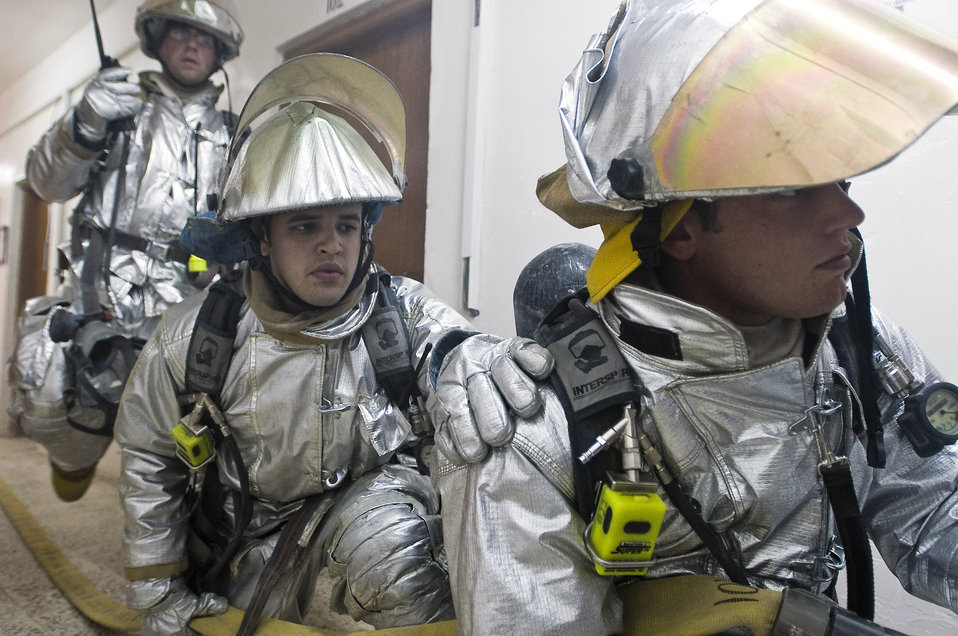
Practice makes perfect

Tech. Sgt. Garrick Hasty, Airman 1st Class Gregory Ramirez and Senior Airman Nathan Sole prepare to enter a smoke-filled room during a structural firefighting drill Oct. 3 at Ali Base, Iraq. Sergeant Hasty is deployed from Vandenberg Air Force Base, Calif., Airman Ramirez is deployed from Columbus AFB, Miss., and Airman Sole is deployed from the Minnesota Air National Guard's 133rd Airlift Wing.